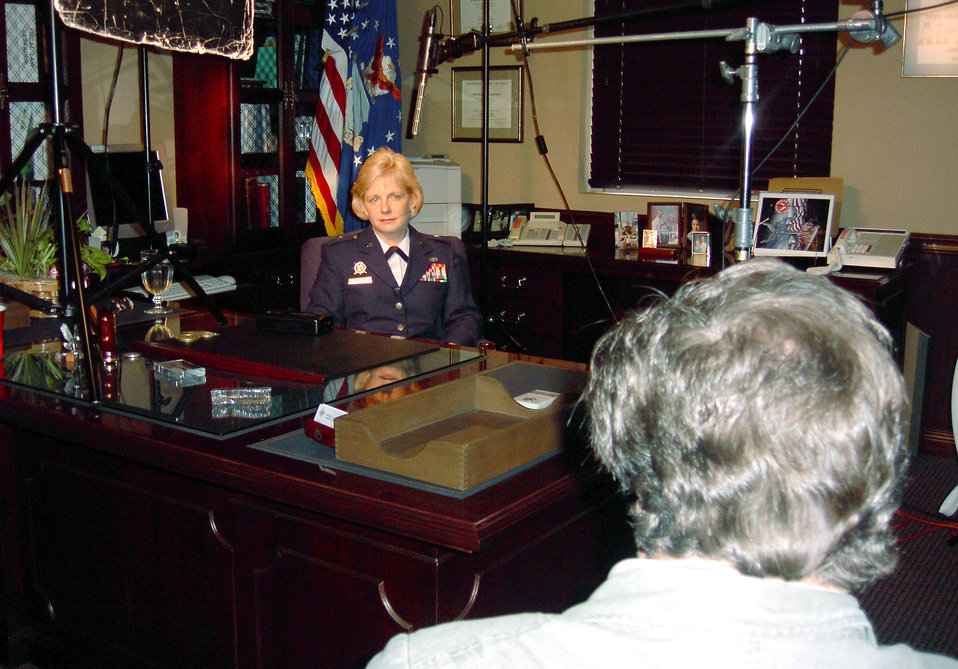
History channel

SCOTT AIR FORCE BASE, Ill. -- Brig. Gen. Jarisse J. Sanborn is interviewed June 19 for a two-hour History Channel documentary,